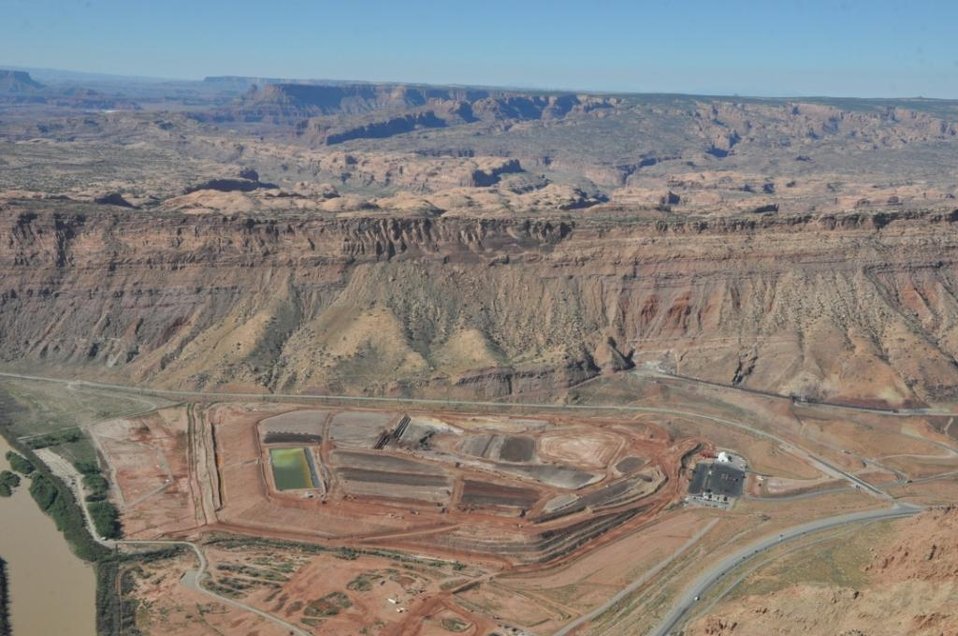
Moab uranium mill tailings pile

A view of the Moab uranium mill tailings pile.

Uranium ore was mined in significant quantities in the U.S. for more than 40 years. Mill tailings are the sand-like material that remains after the ore is processed.